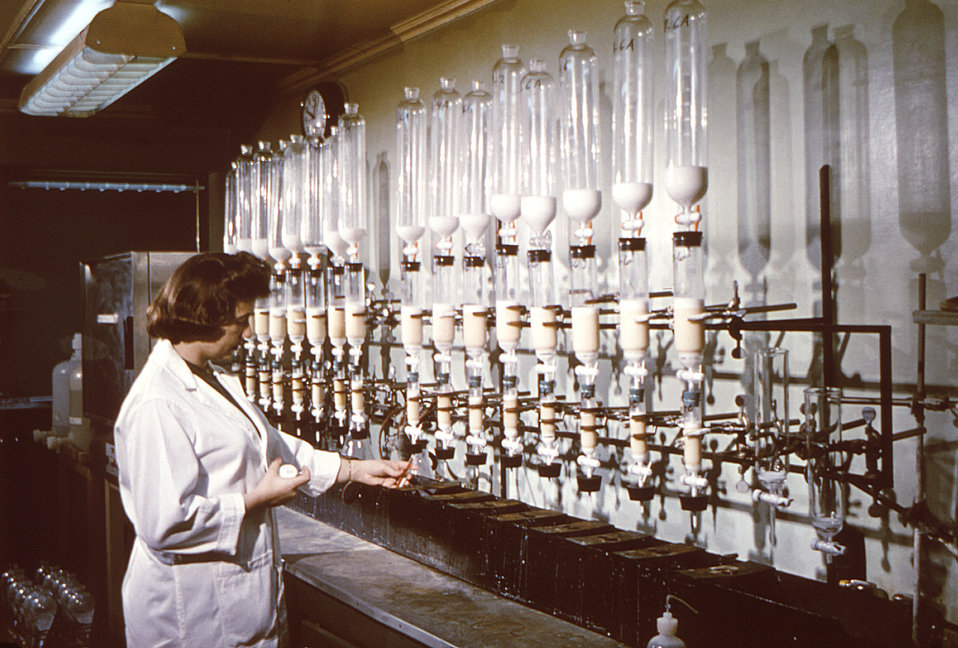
This historic 1963 image depicted a laboratory technician as she was standing in front of a bank of ion-exchange columns, that she was using to separate strontium-90 and yttrium-90 from milk samples, visible inside each column.